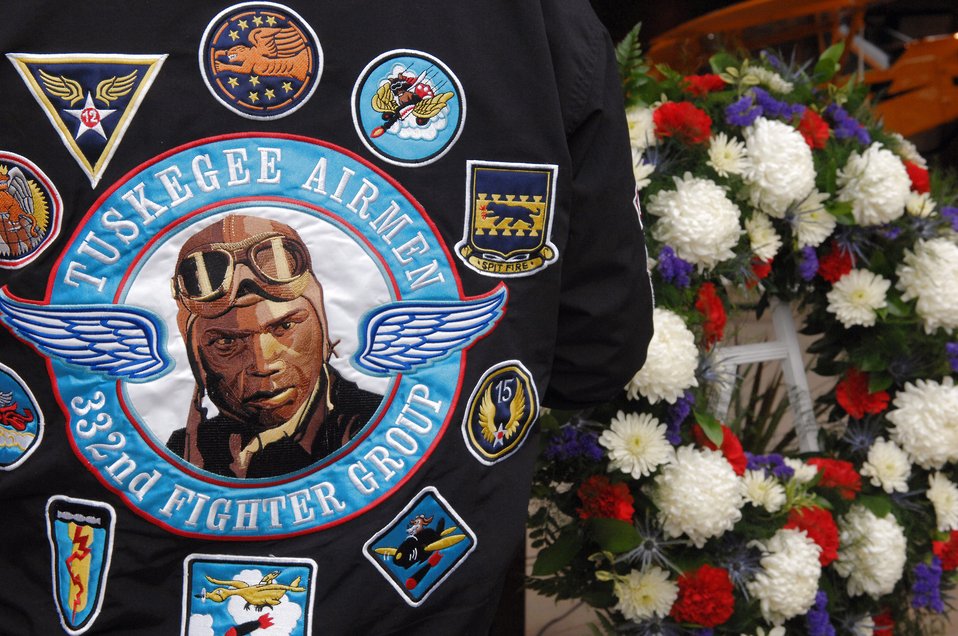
Remembering the Tuskegee Airmen

The Tuskegee Airmen National Historic Site was opened Oct. 11 at Moton Field in Tuskegee, Ala. The site is dedicated to the Tuskegee Airmen no longer with us. A memorial for two of the Airmen who passed away recently was recognized and their ashes were sprinkled on the airfield. Moton Field in the 1940s was the only primary flight training facility for the first African American pilot candidates in the Army Air Corps, these pilots are known as the Tuskegee Airmen.